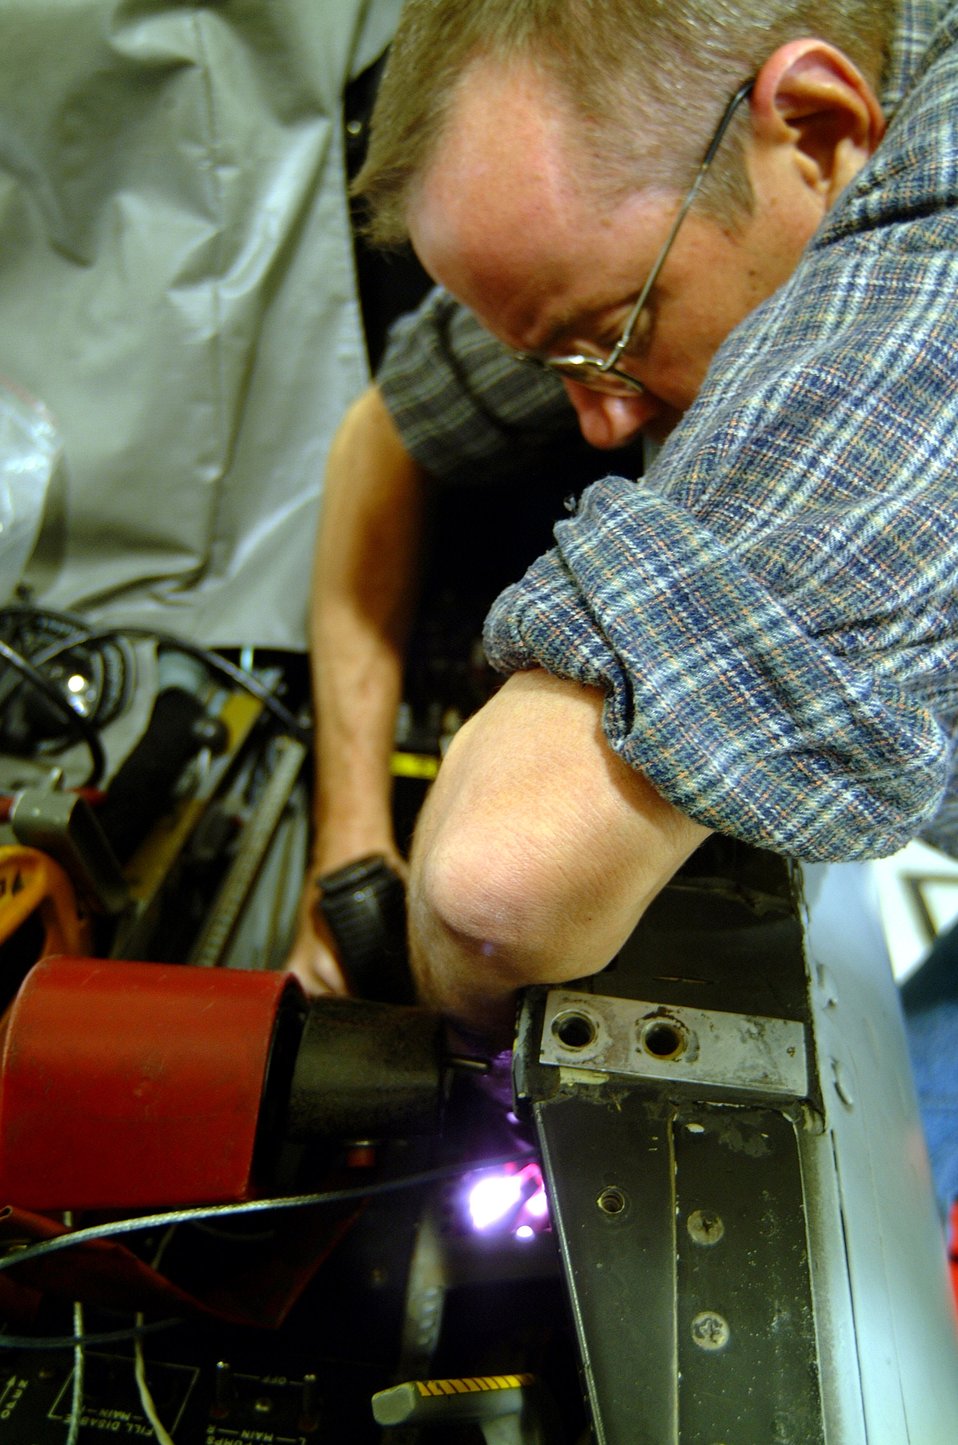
Whiteman A-10s upgrading with

Air Reserve Technician Tech. Sgt. Paul Hanson uses an infrared